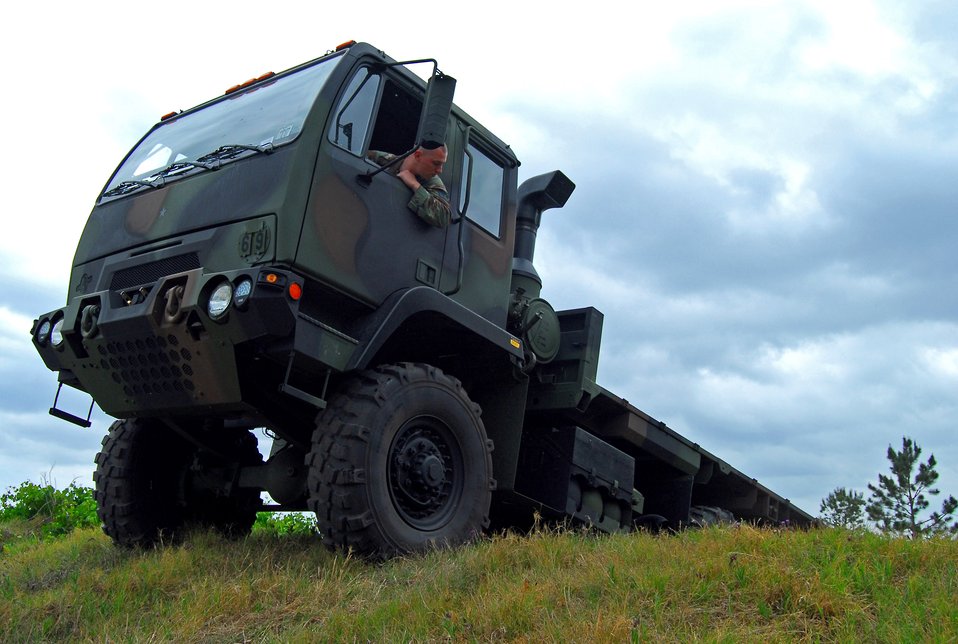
New tactical vehicle rolls onto Moody

Staff Sgt. Tim Bele navigates a new medium tactical vehicles over an obstacle May 9 at Moody Air Force Base, Ga. The MTV is a replacement for the M923 five-ton utility truck. Sergeant Bele is a 820th Security Forces Group vehicle mechanic.